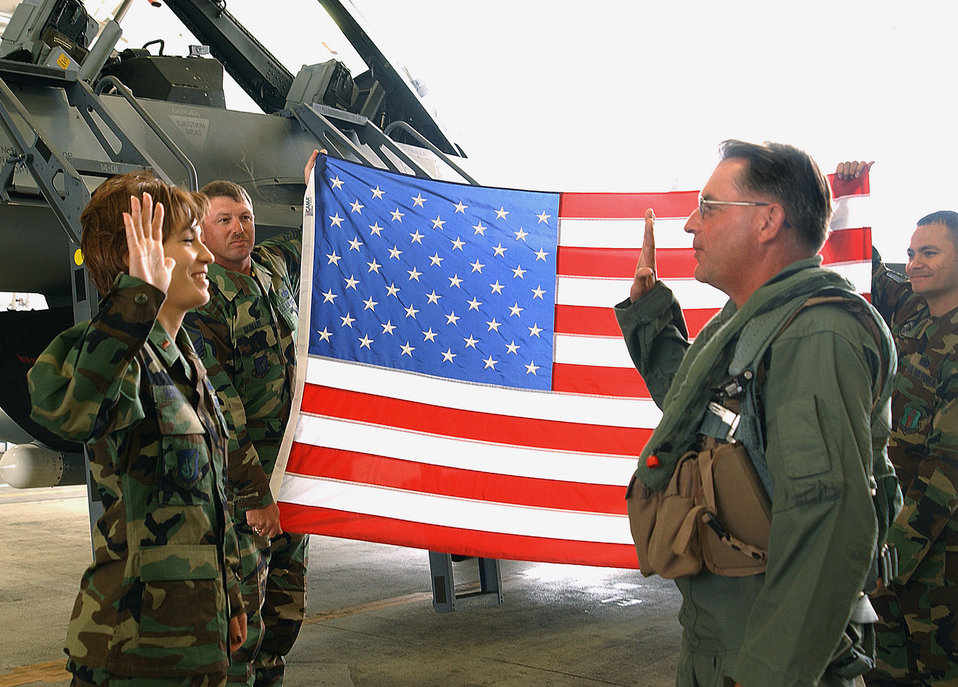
Do you swear, Dad?

MISAWA AIR BASE, Japan -- Second Lt. Sherry Mattson gives the oath of enlistment to her father, Chief Master Sgt. Brett Allison, here Sept. 27. Lieutenant Mattson is a contracting officer for the 374th Airlift Wing, and Chief Allison is the 35th Operations Group superintendent.